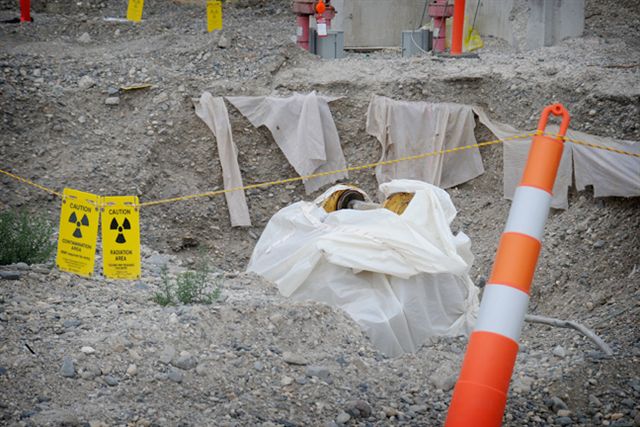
RAN DD RTC S77 TRA-613 PROGRESS 072610 P6555-18 A